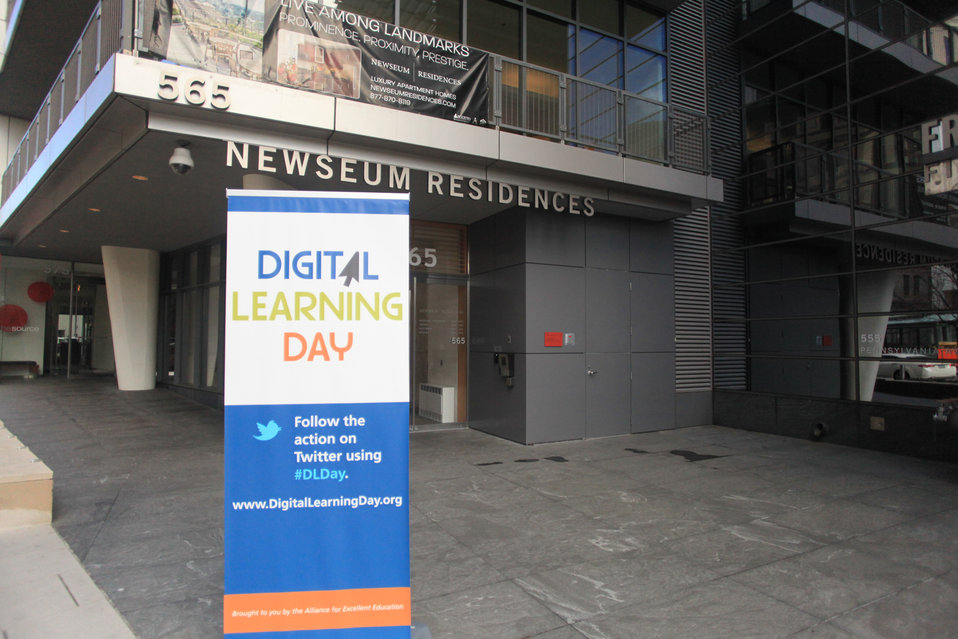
Digital Learning Day Town Hall

Sign outside of the event in Washington, DC, February 1, 2012.